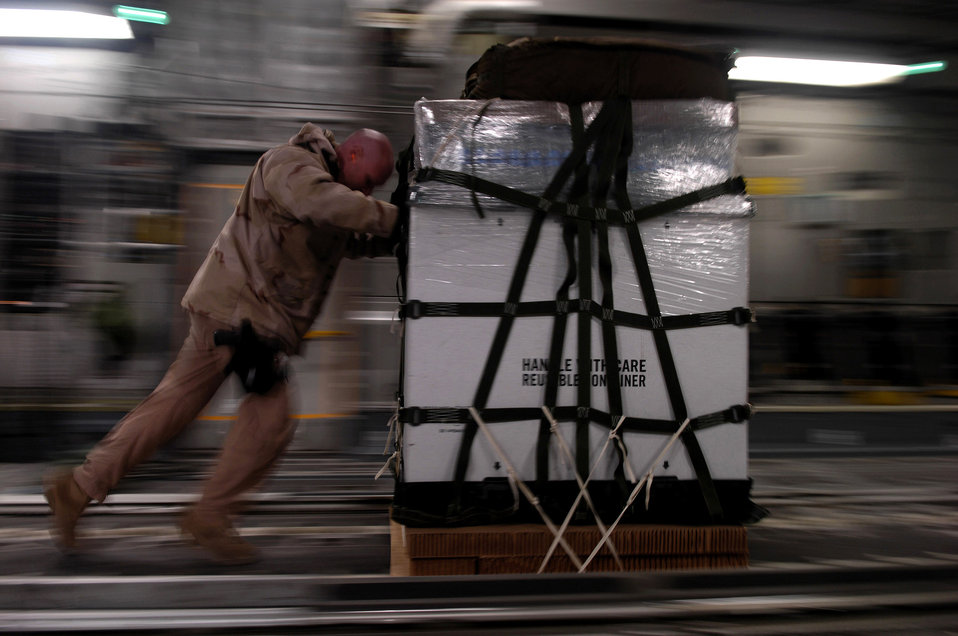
Airmen airdrop 80,000 pounds of food, supplies for Afghans

Staff Sgt. Chris Koch loads one of 40 bundles on a C-17 Globemaster III for a Joint Precision Airdrop Delivery System of 40 bundles of humanitarian supplies to a drop zone Jan. 14 in Afghanistan. Sergeant Kock is a loadmaster from the 17th Airlift Squadron from Charleston Air Force Base, S.C., and is deployed to the 816th Expeditionary Airlift Squadron in Southwest Asia.